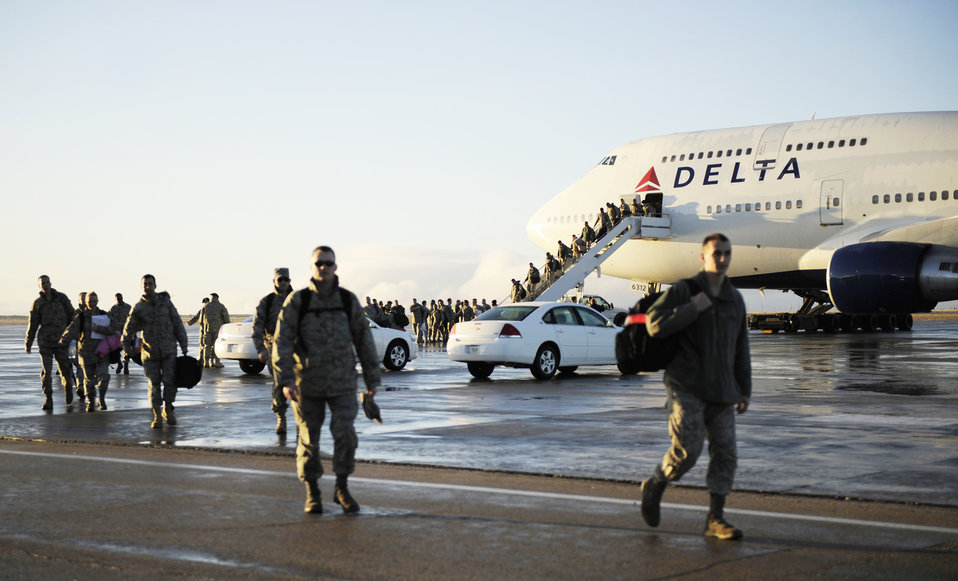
Squadron returns from South Korea

More than 300 Airmen from the 389th Fighter Squadron return from a four-month deployment to South Korea Jan. 20, 2010, at Mountain Home Air Force Base, Idaho. The deployment was in support of U.S. government and Department of Defense global engagement strategies.